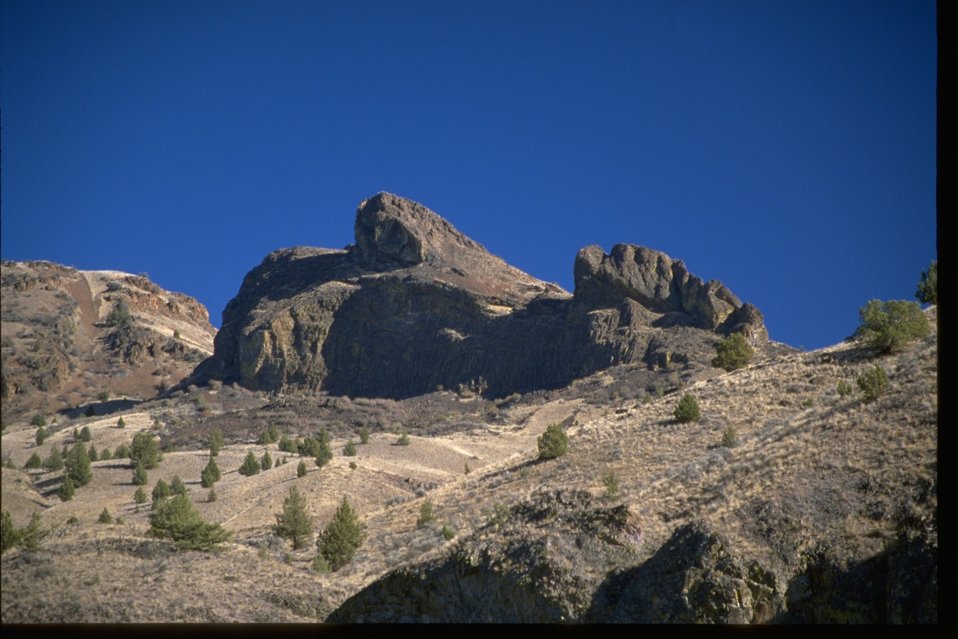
Sleeping Indina above the John Day River.